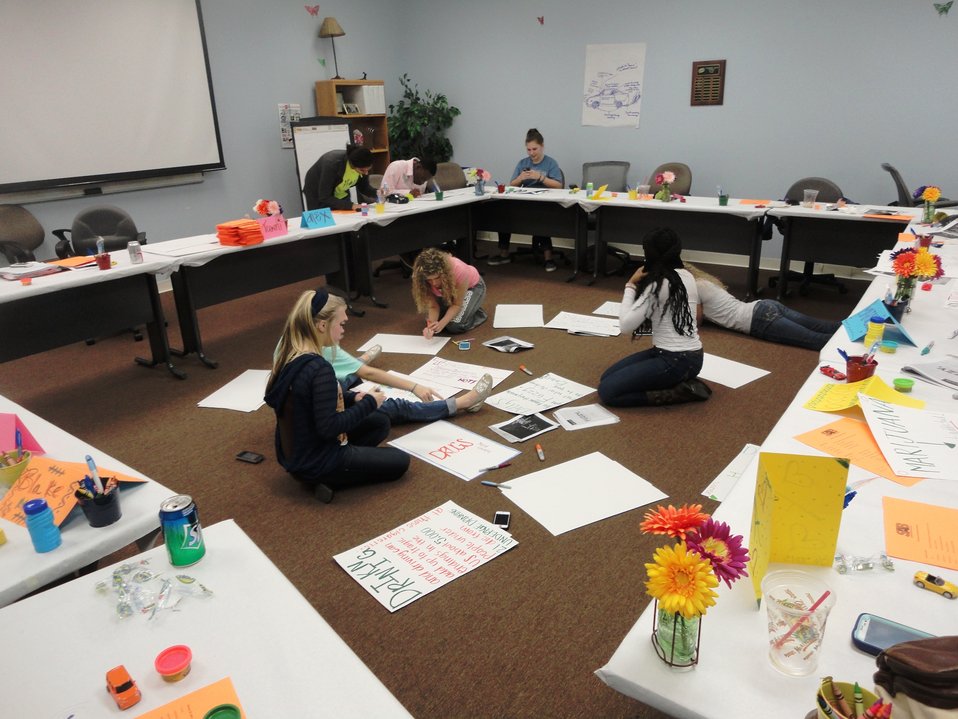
DREAM's, MS Student Advisory Board of Youth Highway Safety NDFW 2013

Mississippi High School Students participate in NDFW 2013 events.